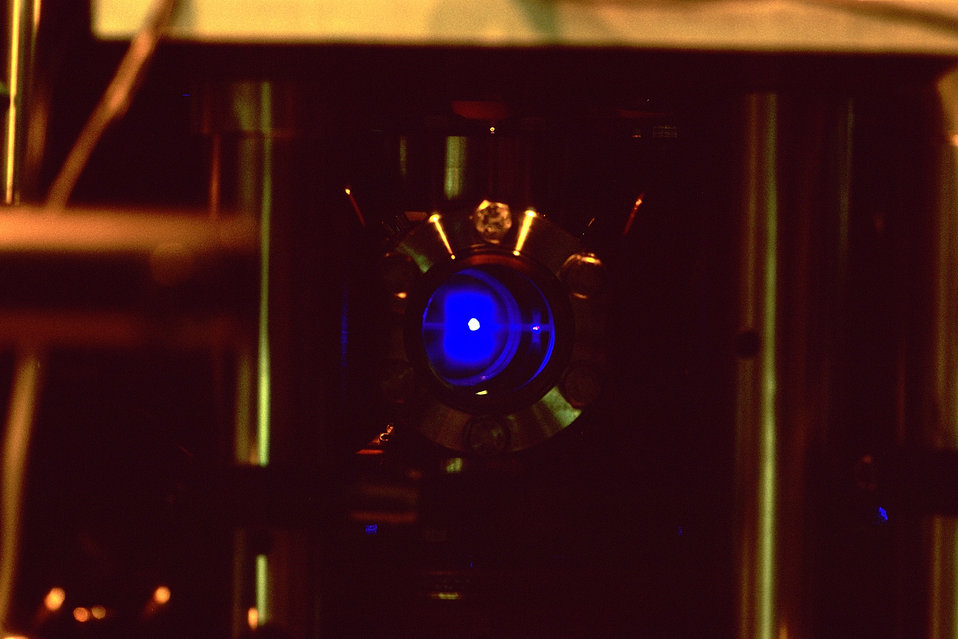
Strontium Atomic Clock Demonstrates Super-Fine 'Ticks'

In JILA's new optical atomic clock, blue laser light is used to cool and trap strontium atoms as the first step before loading them into a 'lattice' made of light. The blue light and fluorescing atoms are visible in the magnetic-optical trap, located inside a vacuum chamber.